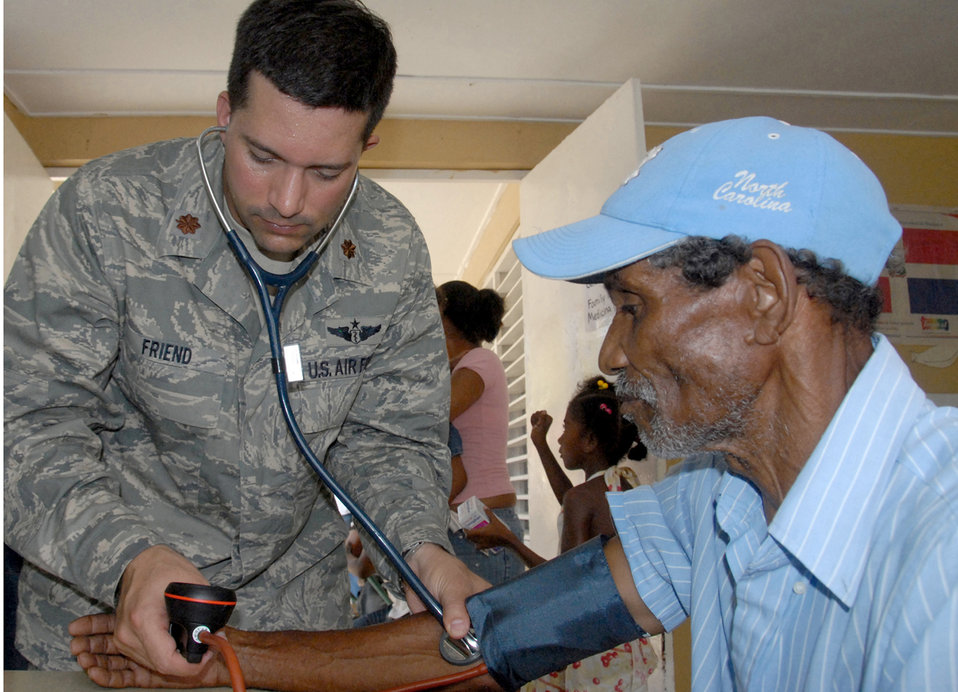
Team provides medical care in Dominican Republic

Maj. (Dr.) Rodney Friend checks a Dominican patient's blood pressure during a medical readiness exercise May 24, 2010, in the Dominican Republic. A team of 39 medical specialists from Air Force Reserve Command is providing medical care to four towns in the Puerto Plata region of the country. Doctor Friend is a physician with the 927th Aeromedical Staging Squadron at MacDill Air Force Base, Fla.